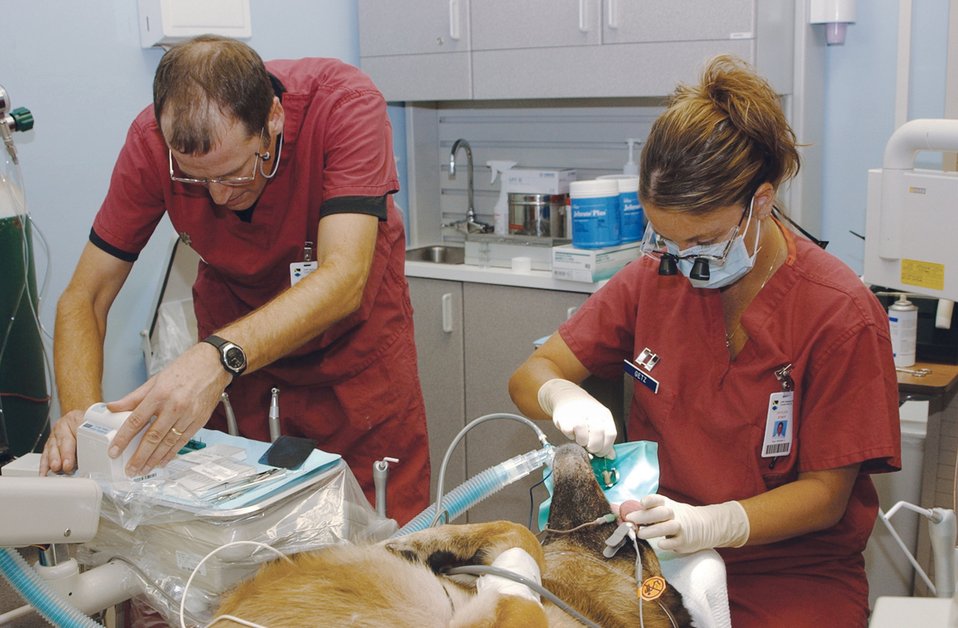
Working dog receives 'canine' treatment

TYNDALL AIR FORCE BASE, Fla. (AFPN) -- Dentist Capt. (Dr.) Michelle Getz, and Lt. Col. (Dr.) Mark Muth, measure the length of the root in one of Rex's canines during a two-day root canal procedure. Colonel Muth and Captain Getz are with the 325th Aeromedical-Dental Squadron. Rex is a military working dog with the 325th Security Forces Squadron.